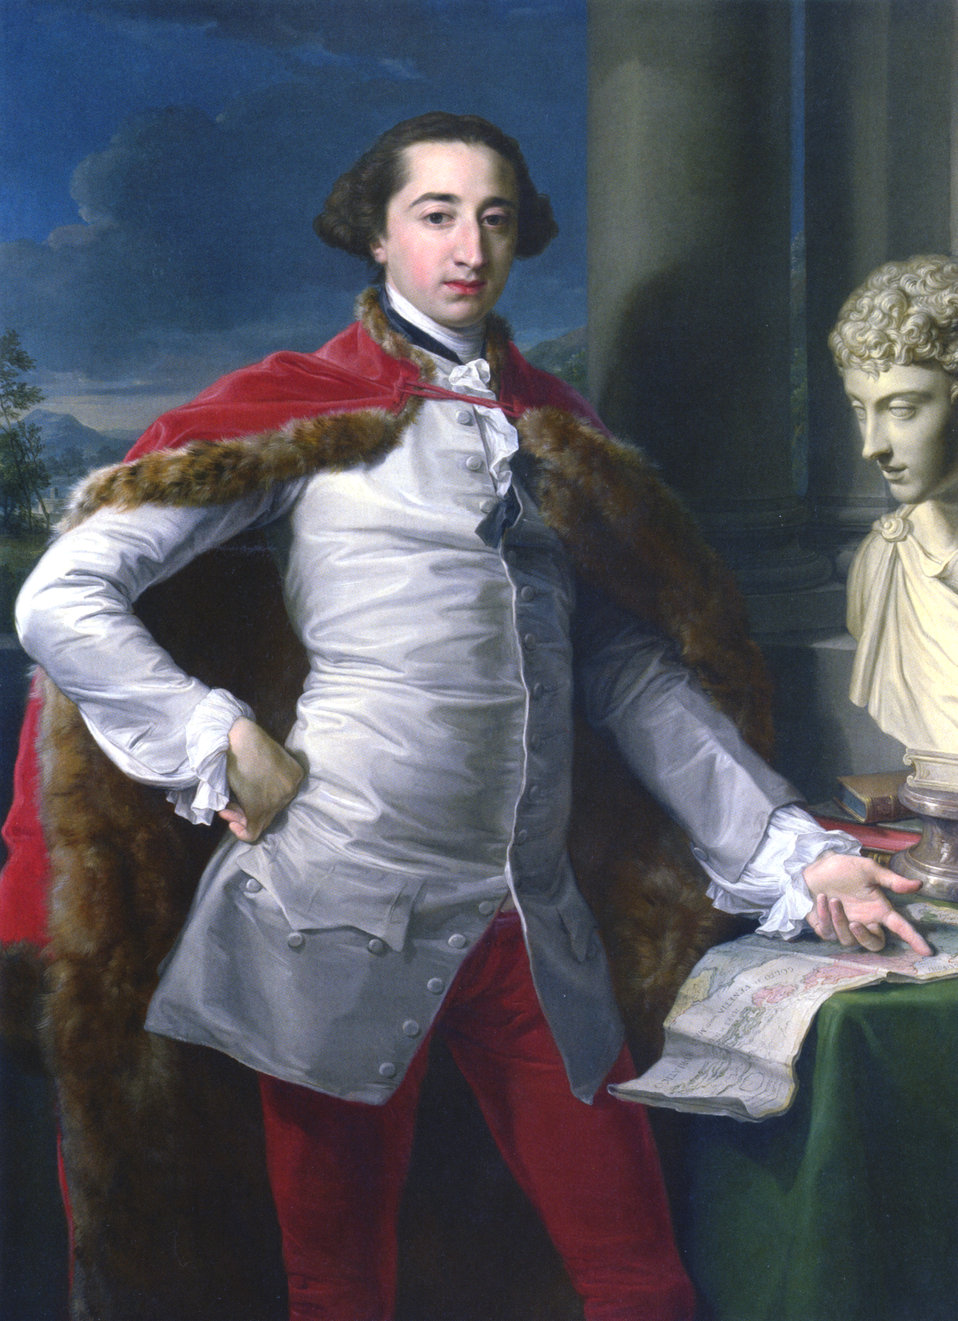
Pompeo Batoni - Portrait of Richard Milles - 1758